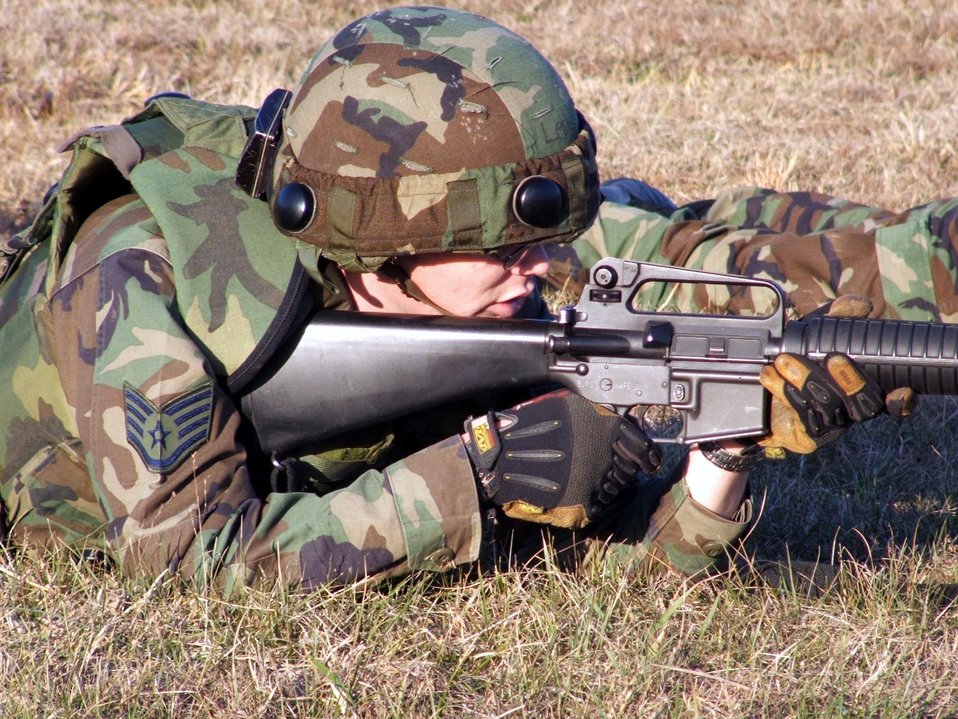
AIR FORCE INTEGRATED CONTINGENCY SKILLS TRAINING COURSE 06-1

FORT DIX, N.J. (AFPN) -- Staff Sgt. Brenden Leahy takes up a position during a combat patrol and tactics training session Jan. 12 More than 100 students from multiple career fields participate in the Air Force Integrated Contingency Skills Training Course. In the course, Airmen learn everything from combat tactics and patrolling to convoy operations and combat first aid. The course is directed and taught by the Air Mobility Warfare Center's 421st Combat Training Squadron. Sergeant Leahy is with the 816th Contingency Response Group at McGuire Air Force Base, N.J.